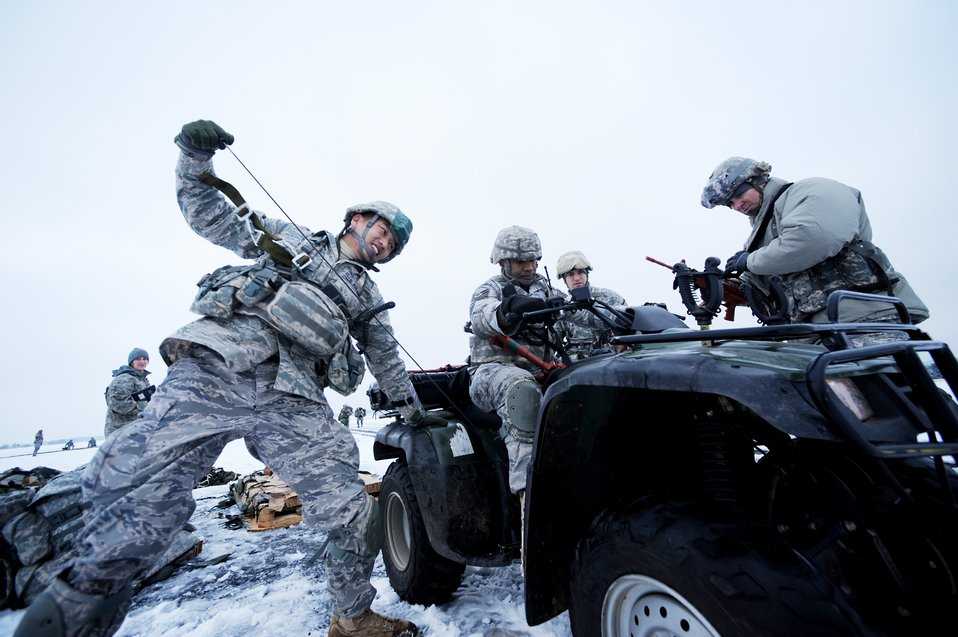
Ramstein forces practice air insertion

Airmen from the 435th Security Forces Squadron at Ramstein Air Base, Germany, crank the engine for their four-wheeler after an airborne insertion mission at nearby Bitburg Airport Jan. 25, 2010.